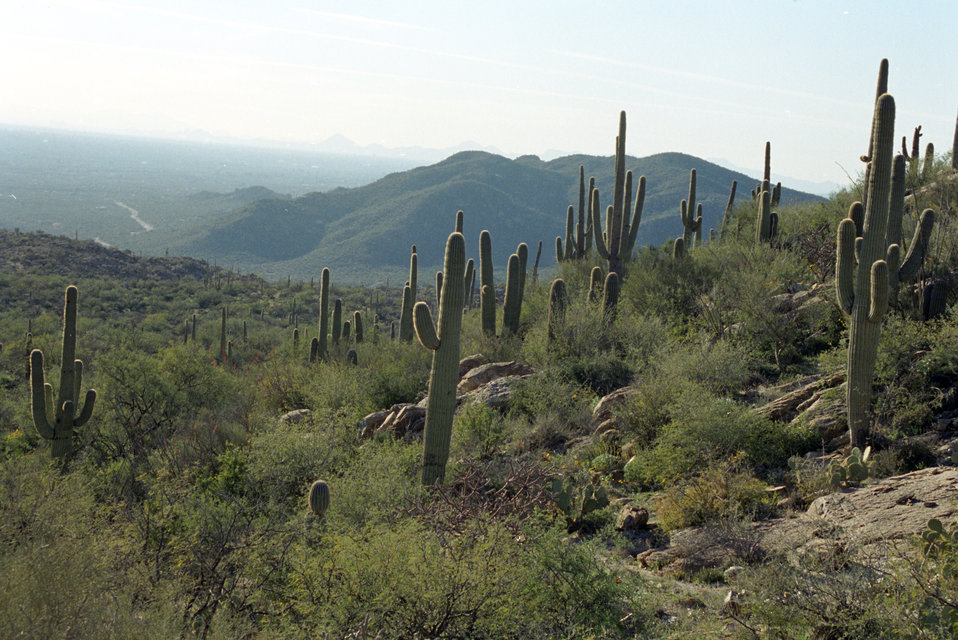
Saguaro cacti thrive on the desert part of the Tonto National Forest near Tucson, AZ on January 25, 2001. The Tonto National Forest near Tucson, AZ is the fifth largest forest in the U.S. and is one of the most-visited “urban” forests in the U.S. (approximately 5.8 million visitors annually). The forest is approximately 3 million acres of rugged and spectacularly beautiful country, ranging from Saguaro cactus-studded desert to pine-forested mountains beneath the Mogollon Rim.